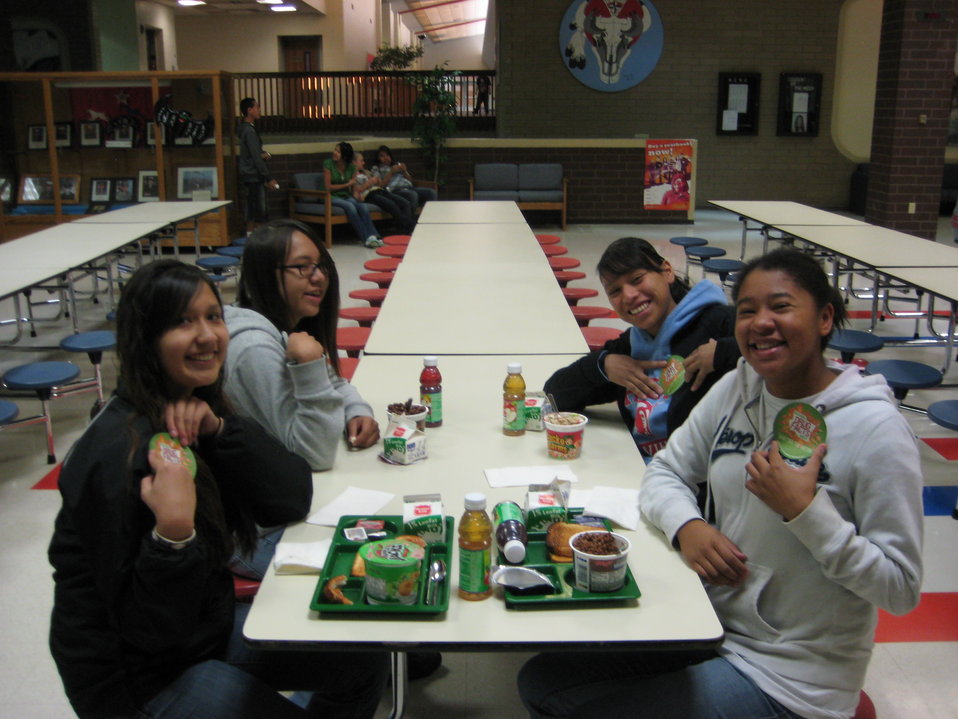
Wyoming Indian High School students sport the official Shatter the Myth stickers.